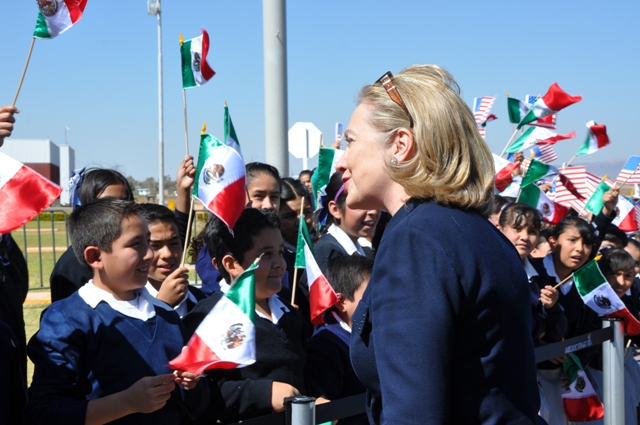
Secretary Clinton Is Greeted By Children

U.S. Secretary of State Hillary Rodham Clinton is greeted by children at the Guanajuato International Airport in Guanajuato, Mexico, on January 24, 2011.